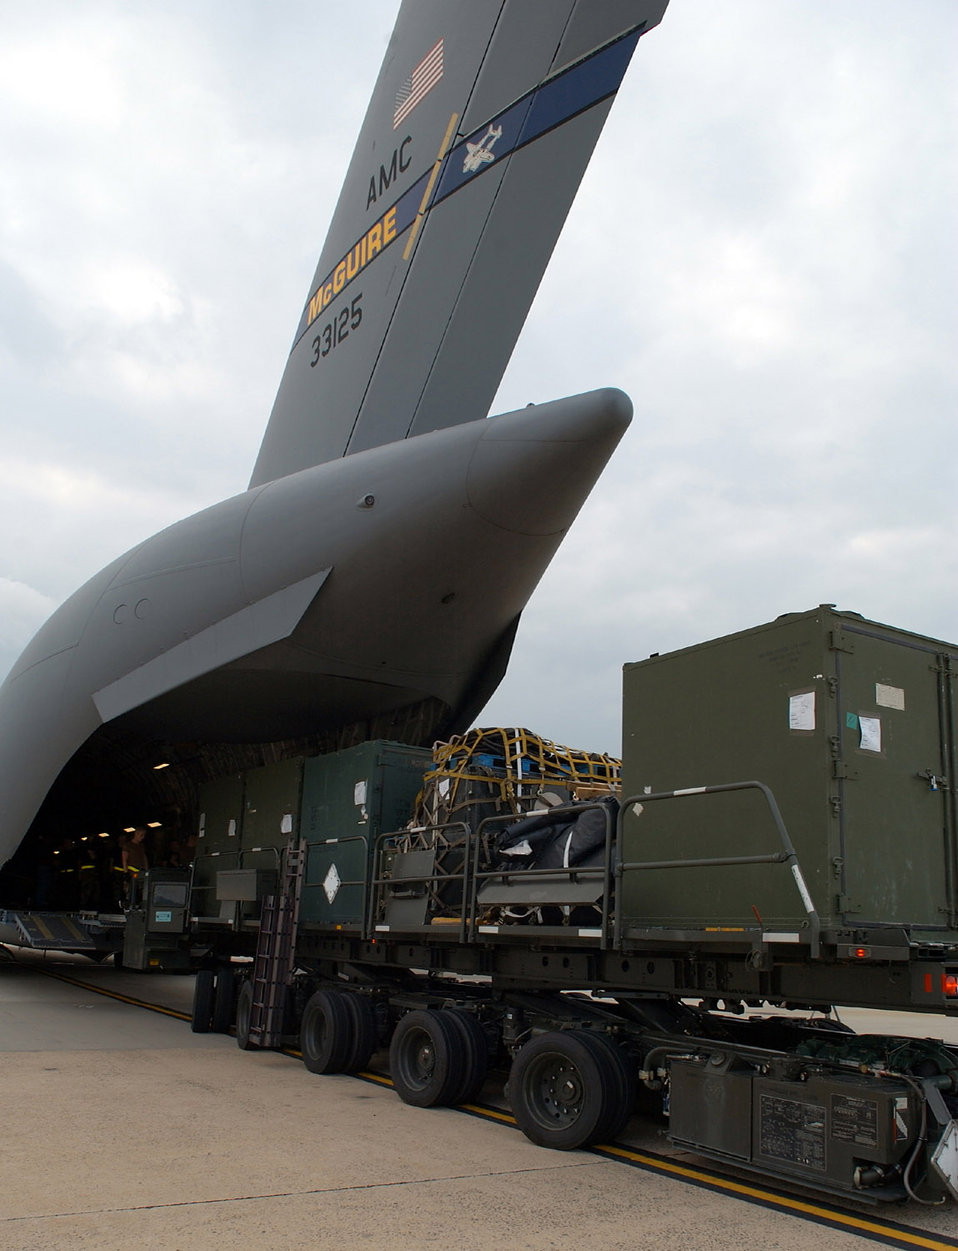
MCGUIRE AIR FORCE BASE, N.J. -- Equipment headed for New Orleans International Airport to assist in the Hurricane Katrina relief effort is loaded onto a C-17 Globemaster III by Airmen with the 305th Aerial Port Squadron here Aug. 31. Twenty-nine Airmen from the 819th Global Support Squadron and 110,000 pounds of equipment departed for the region. The 819th GSS trains and rapidly deploys Airmen to quickly open airfields in remote locations extending Air Mobility Command's ability to deploy people and equipment worldwide.